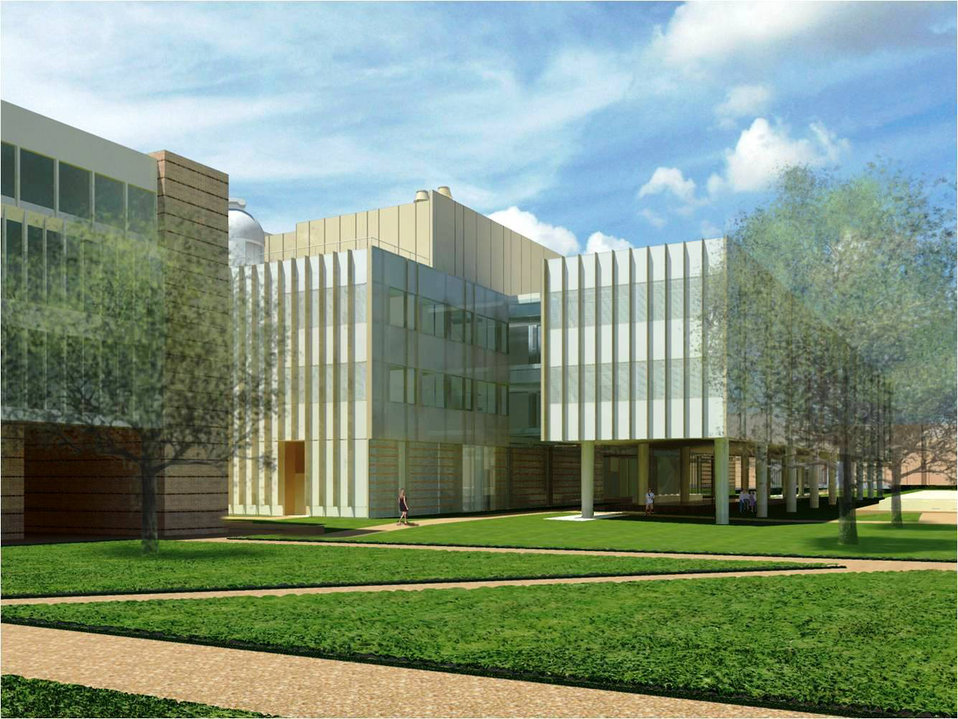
Brockman Hall for Physics

Artist rendering of the planned new Brockman Hall for Physics at William Marsh Rice University, Houston, Texas.